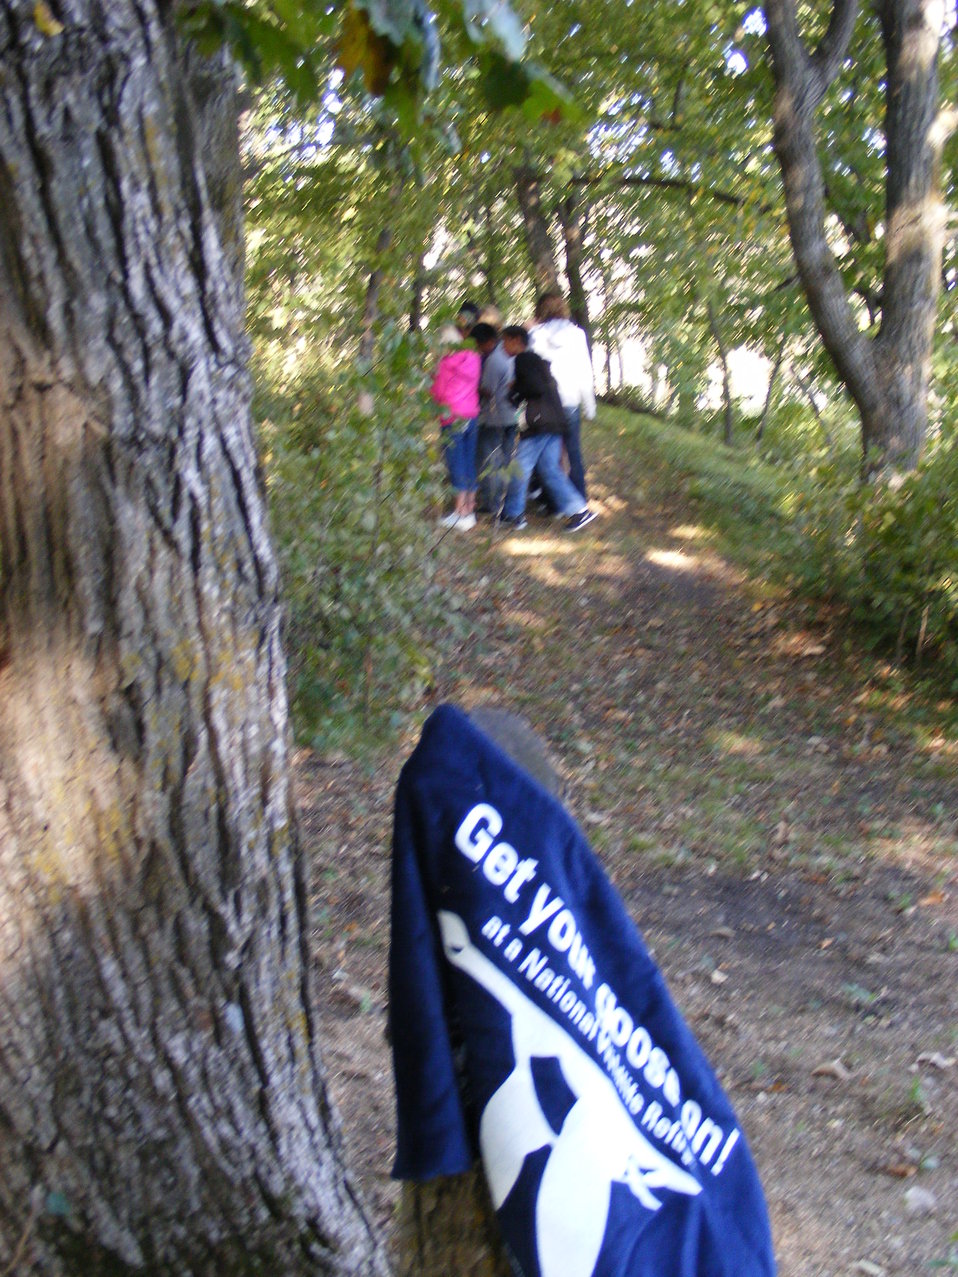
Get Your Goose On!